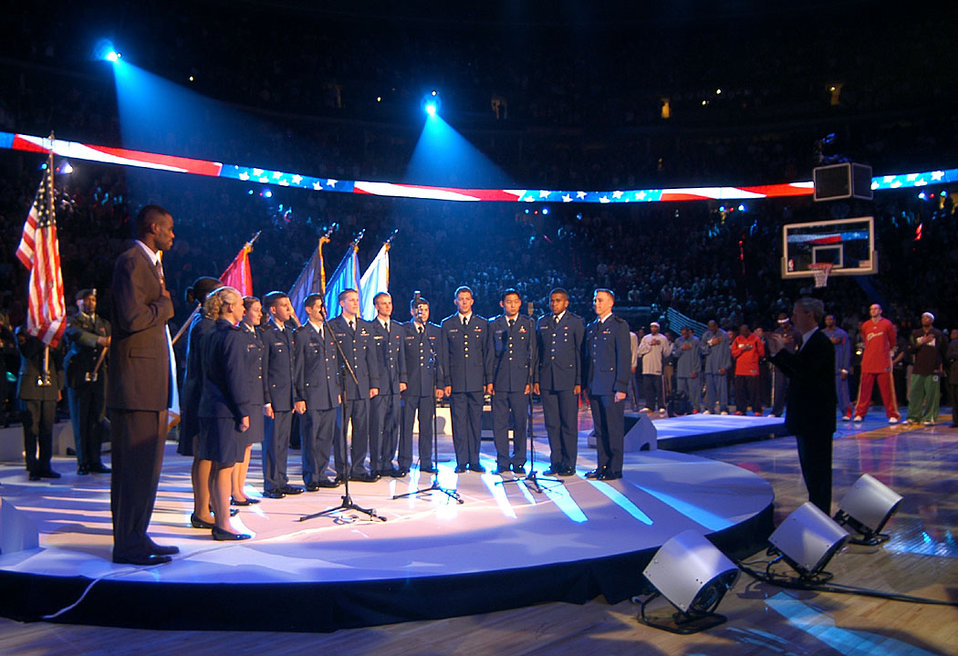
Singing at the NBA All-Star game

DENVER -- The U.S. Air Force Academy Cadet Chorale and David Robinson, a retired San Antonio Spur and a 1987 Naval Academy graduate, sing the national anthem at the 2005 NBA All-Star Game here Feb. 20. The cadet chorale's visit was part of the NBA's salute to the men and women of the armed forces.